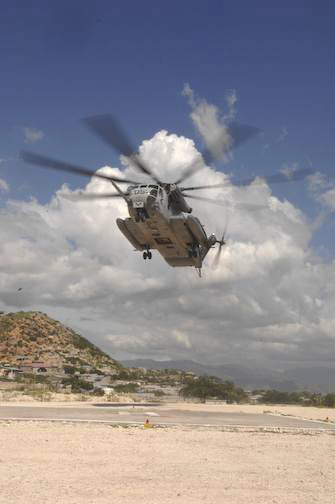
This image depicts a U.S. Navy helicopter engaged in the delivery of emergency food supplies to remote villages in Haiti in 2008 after two hurricanes had struck the island.